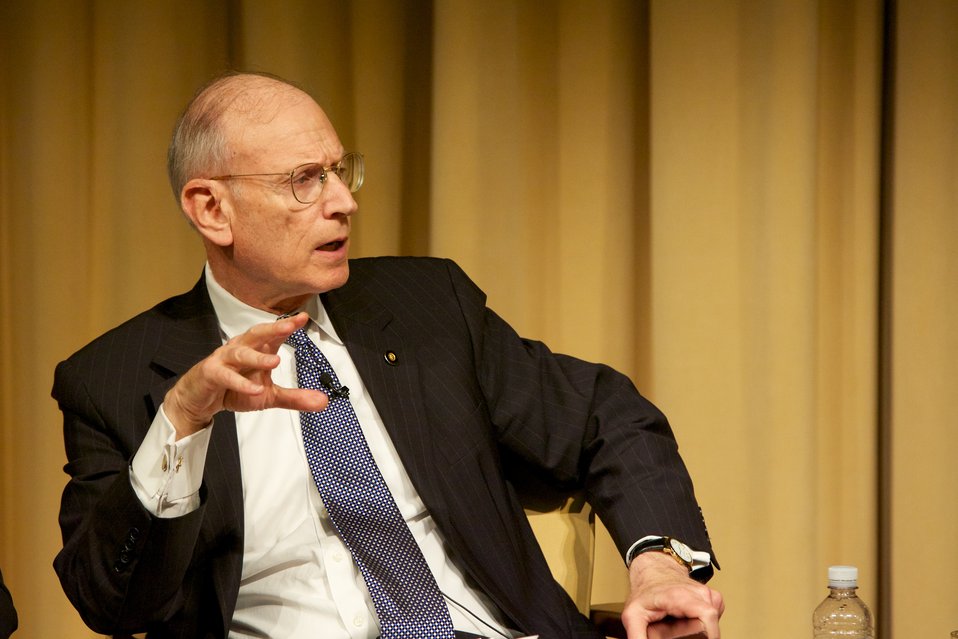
The Monuments Men; Ambassador Stuart E. Eizenstat, former Special Representative of the President and Secretary of State on Holocaust-Era Issues